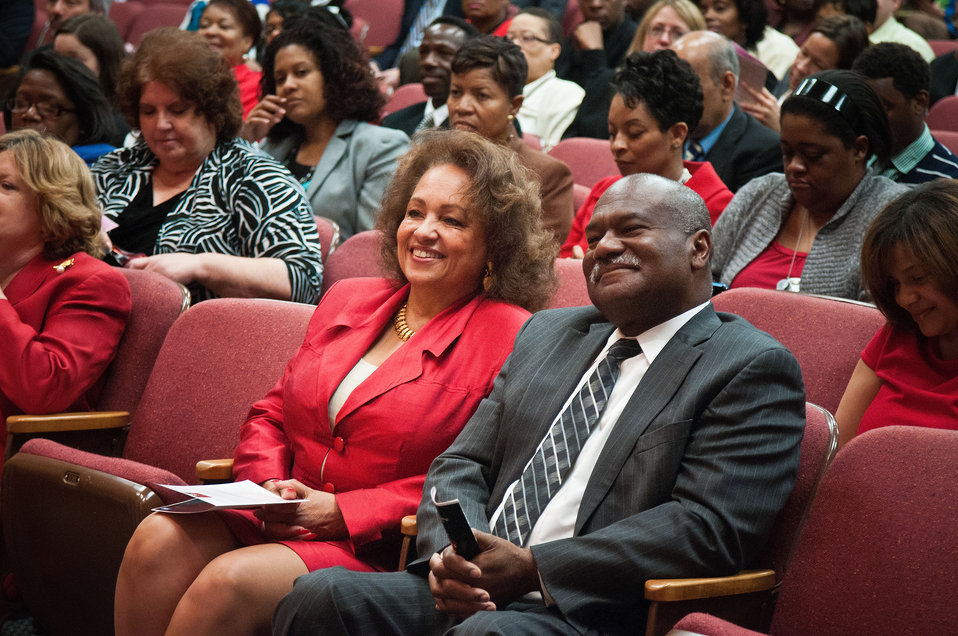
Daphne Maxwell Reid (left) and Pearlie Reed (right), Assistant Secretary for Administration enjoy the performance of the Virginia State University Sankofa Dance Theatre, “A Dancing Tribute to All Women” at the 2012 Women’s History Month Celebration, “Women’s Education – Women’s Empowerment” held at the United States Department of Agriculture on Thursday, March 8, 2012 in Washington, D.C.